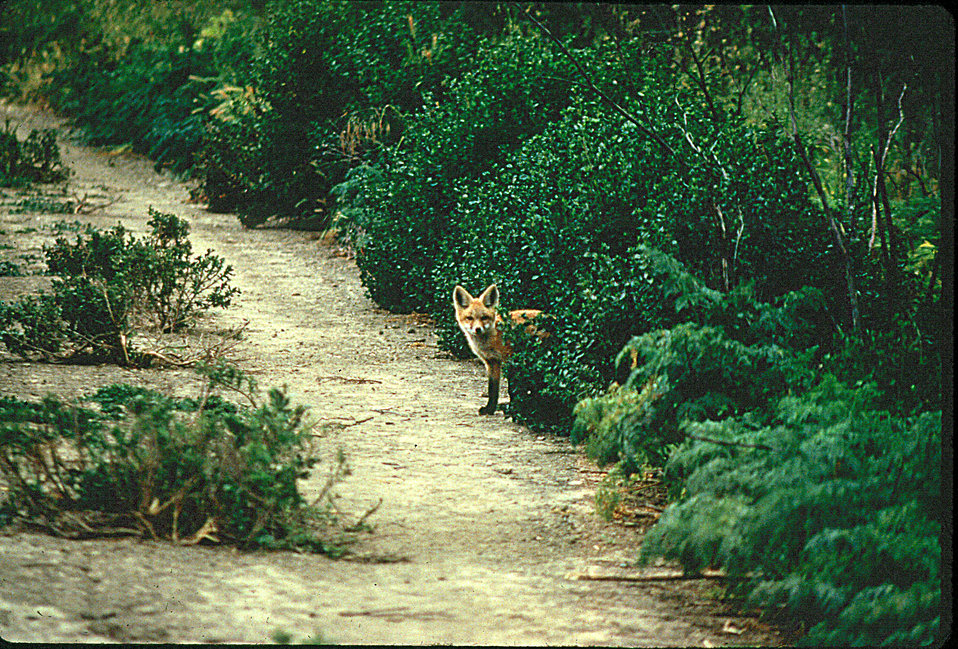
Sierra Nevada red fox on a path

The Fish and Wildlife Service is considering the Sierra Nevada red fox for endangered species protections.

Currently the Sierra Nevada red fox’s distribution is thought to be restricted to two small populations: one in the vicinity of Lassen Peak at the most southerly extent of the Cascades range, and one in the vicinity of Sonora Pass, approximately 160 miles to the south in the Sierra Nevada range.